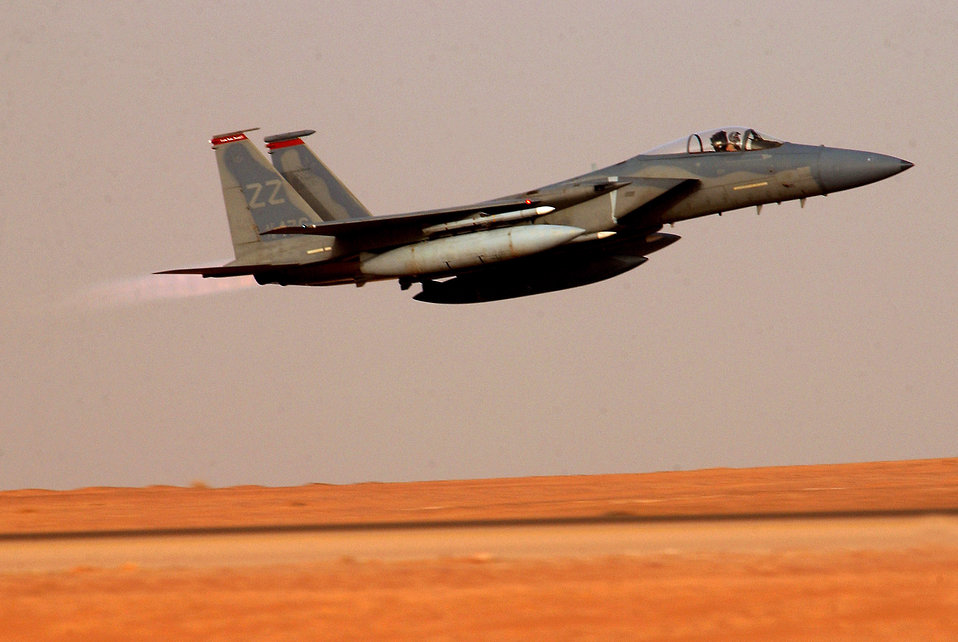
Afterburners

OPERATION IRAQI FREEDOM -- An F-15C Eagle from the 363rd Expeditionary Fighter Squadron takes off for an Operation Iraqi Freedom sortie March 23. Aircraft from the 363rd EFS work around the clock flying missions.